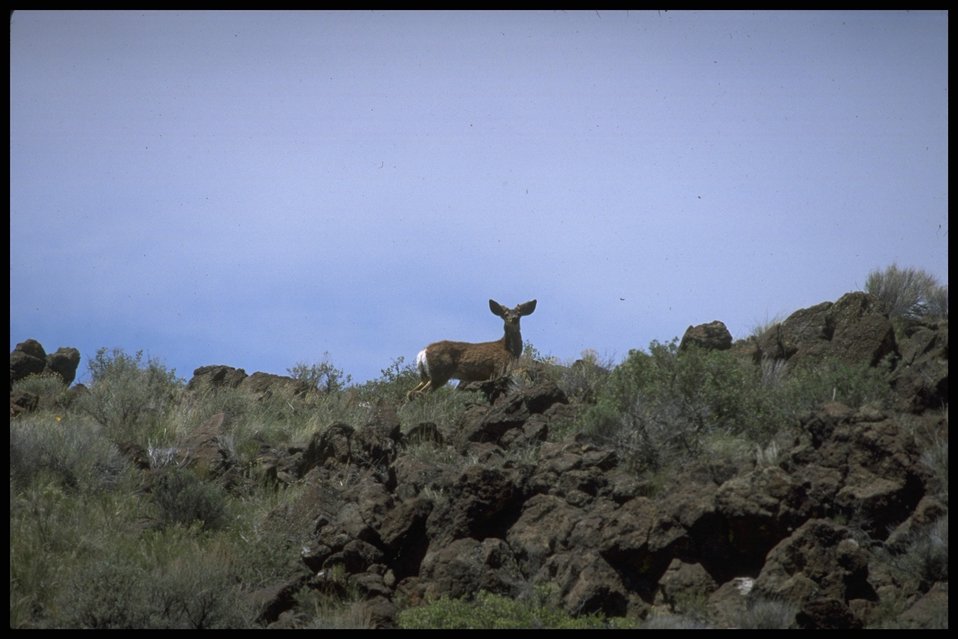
Farshot of deer, Lakeview District.